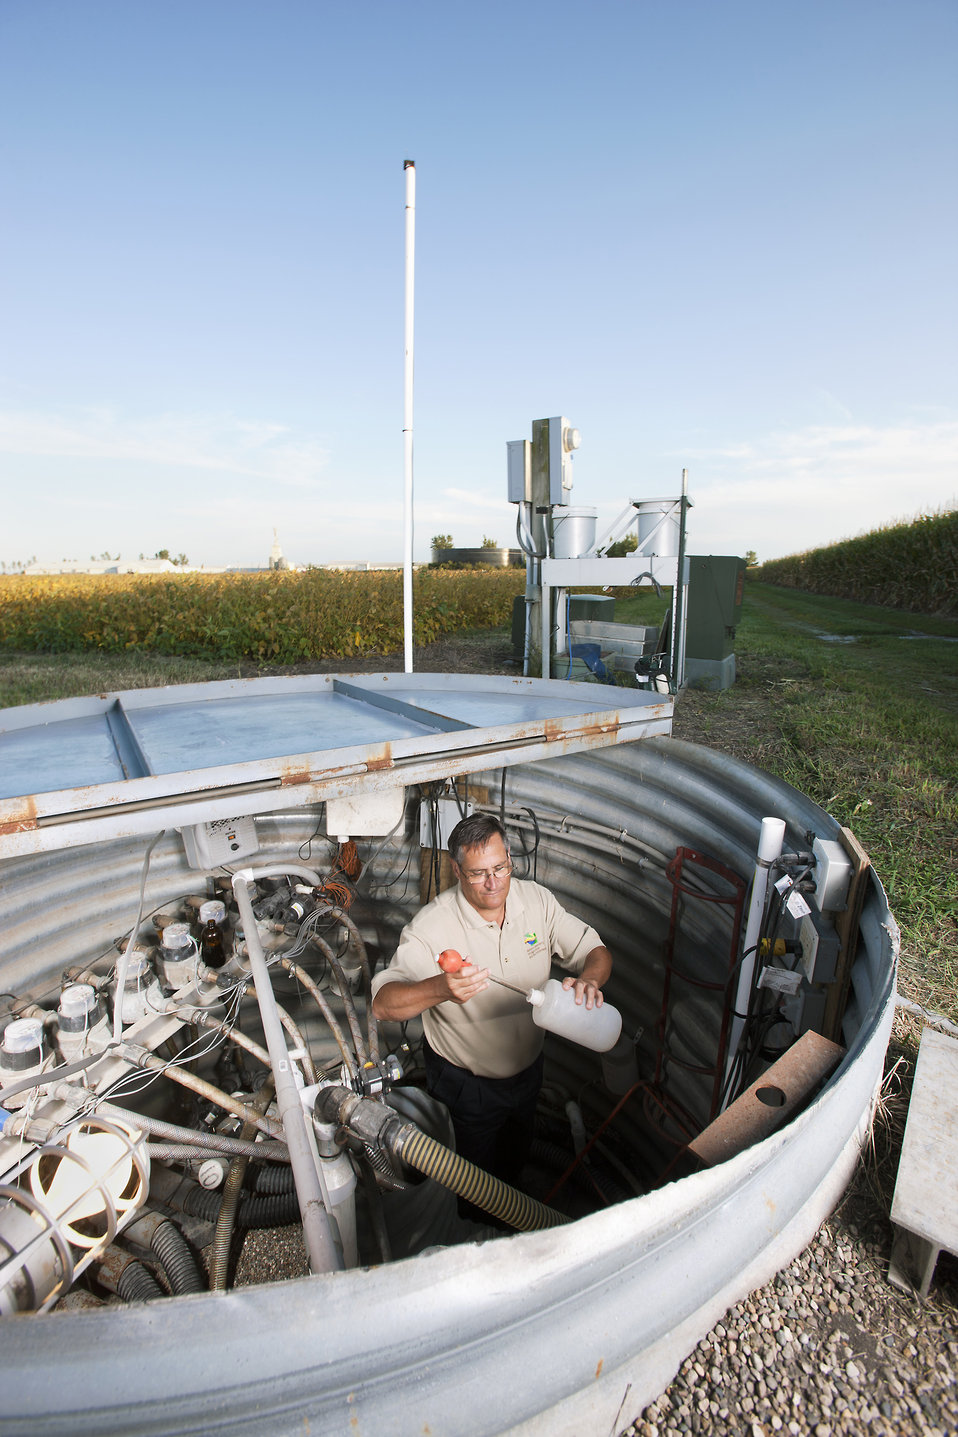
Subsurface drainage water from individual field plots is routed to this sump where flow is measured and samples are prepared for nitrate testing on Jan. 24, 2003. U.S. Department of Agriculture (USDA) Agriculture Research Service (ARS) soil microbiologist Tom Moorman takes a water sample for nitrate analysis.